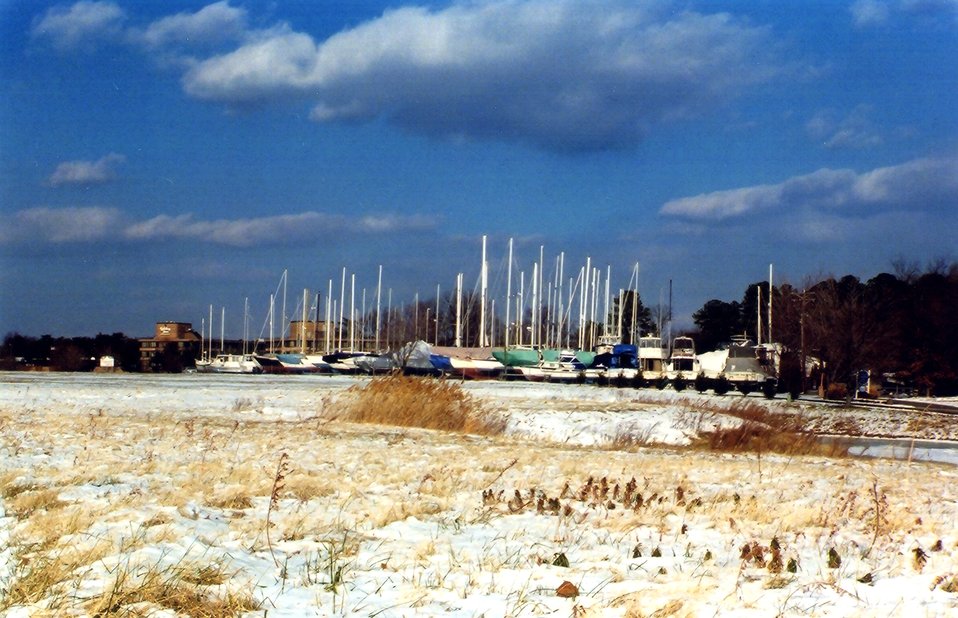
Sailboats in hibernation for the winter.